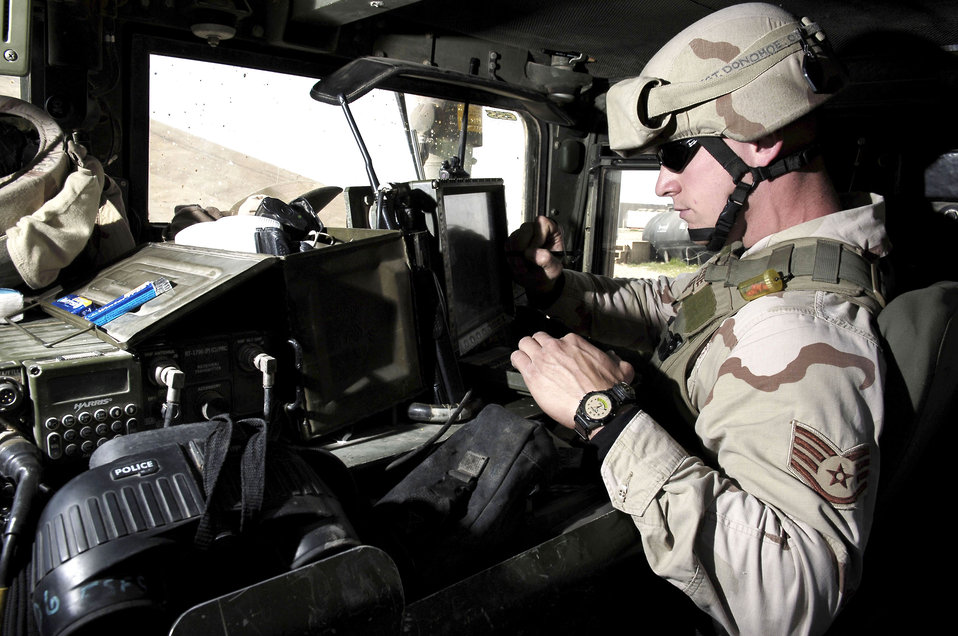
Maintaining security at Kirkuk

Staff Sgt. Patrick Donohoe checks a tracking monitor Feb. 13 at Kirkuk Air Base, Iraq, that shows the location of all friendly units and possible hazards in the area. It also observes all enemy contact. Sergeant Donohoe is a member of the Quick Reaction Force, or QRF, team with the 506th Expeditionary Security Forces Squadron.